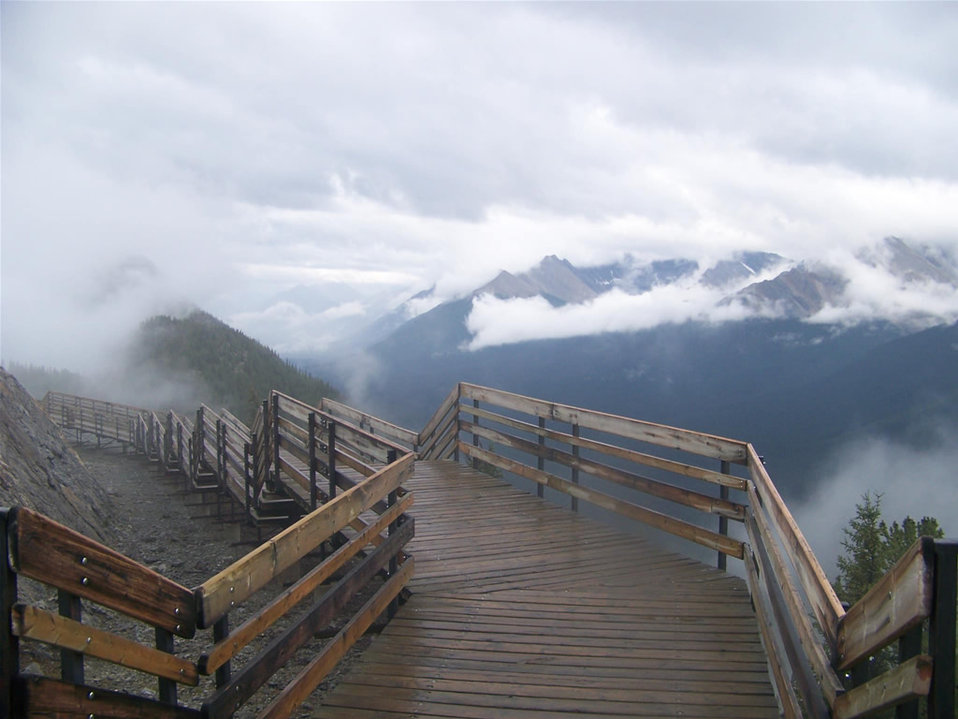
Uploaded by request of Alonzo Spann

Taken in Banff National Park in Calgary

This picture is called entering the gates of nature. Behind the photography shows the sulphur mountain and the clouds surround the pathway and trees.